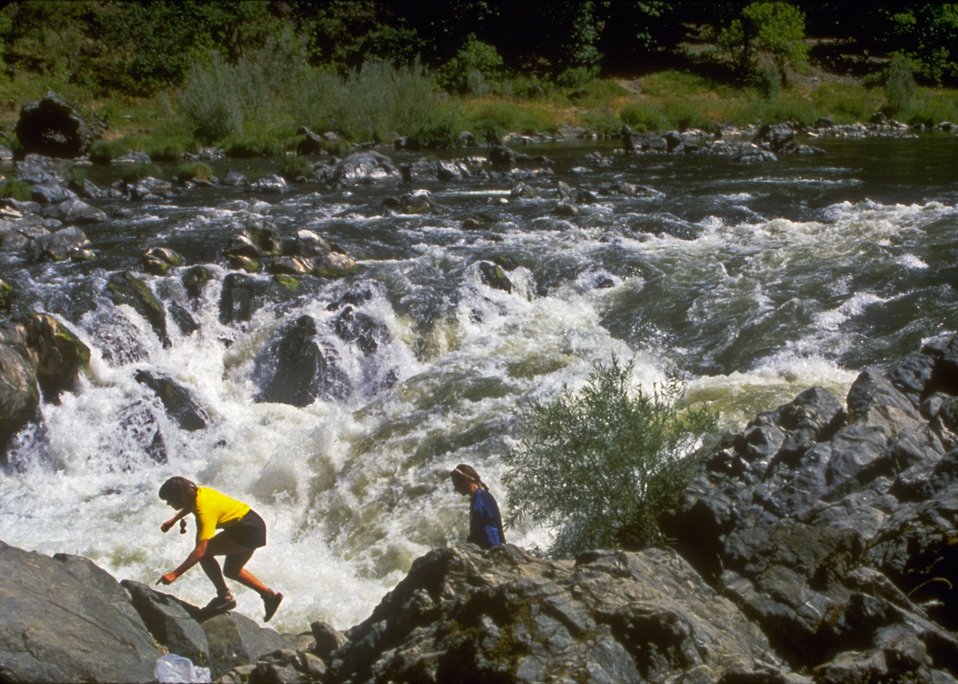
Two hikers on the rocks above Rainie Falls.